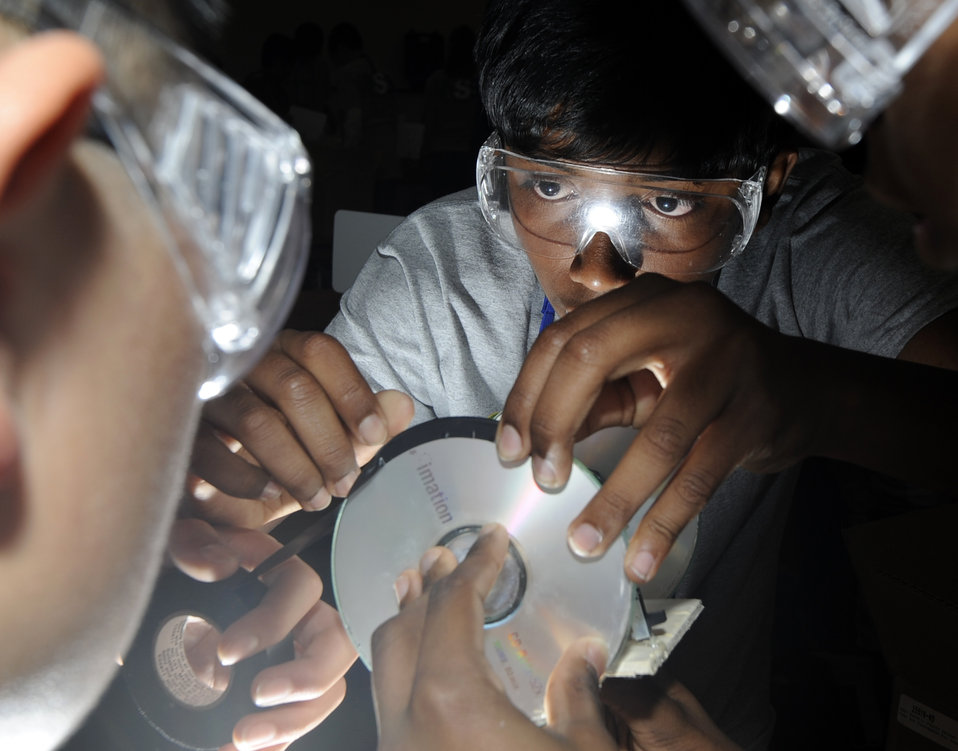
Students from Oxford Middle School in Oxford, MS work on the teams battery operated vehicle during the Electric Car Competition at the 2013 National Science Bowl in Washington, DC.

The Department of Energy created the National Science Bowl in 1991 to encourage students to excel in mathematics and science and to pursue careers in these fields.